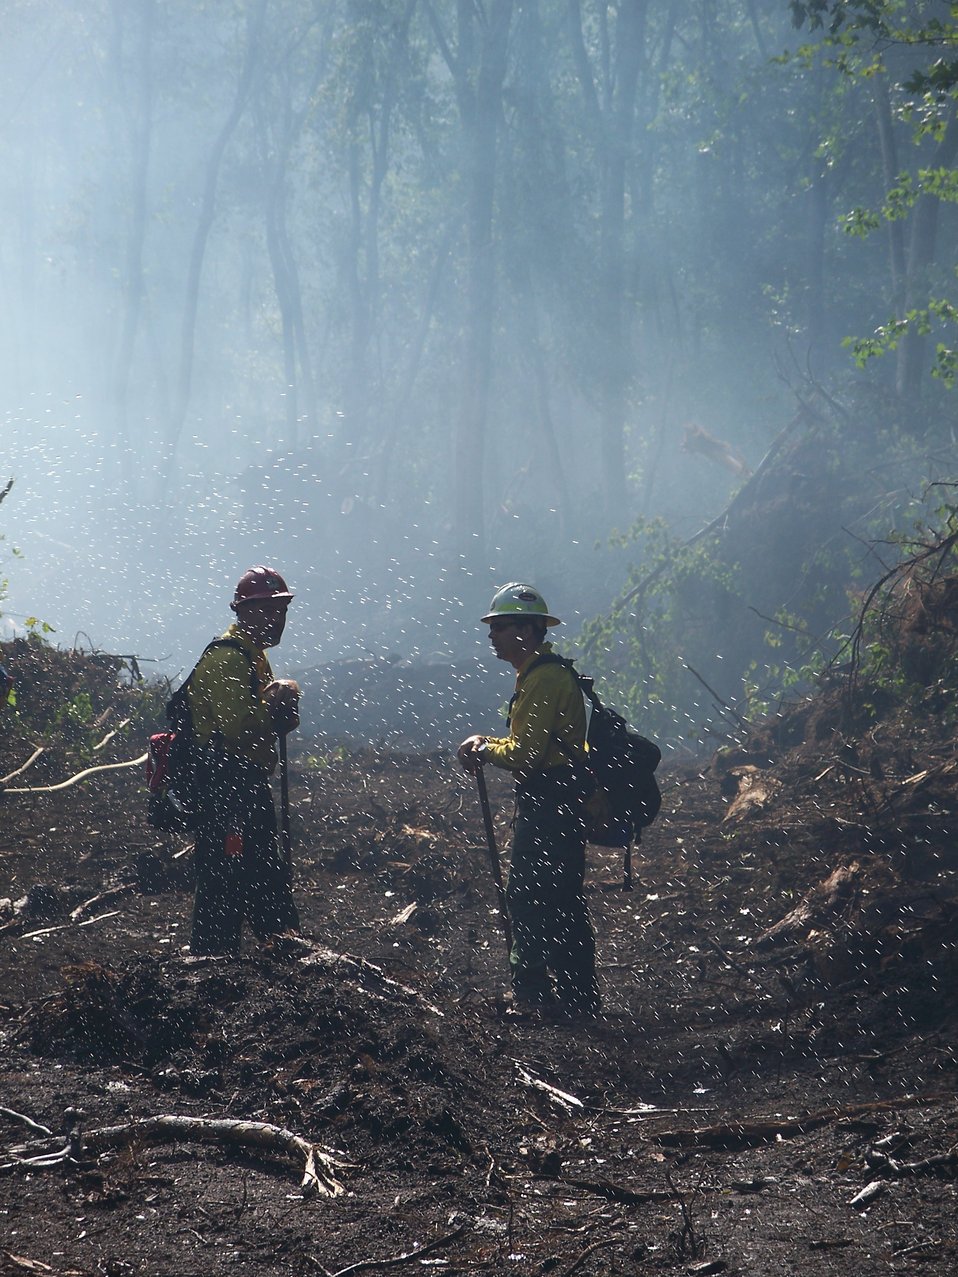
Sprinkler shower

Suffolk, VA, August 2011: Droplets of water from sprinklers se up along the Bull North Fire create a surreal scene at the Lateral West Fire Incident in Great Dismal Swamp.